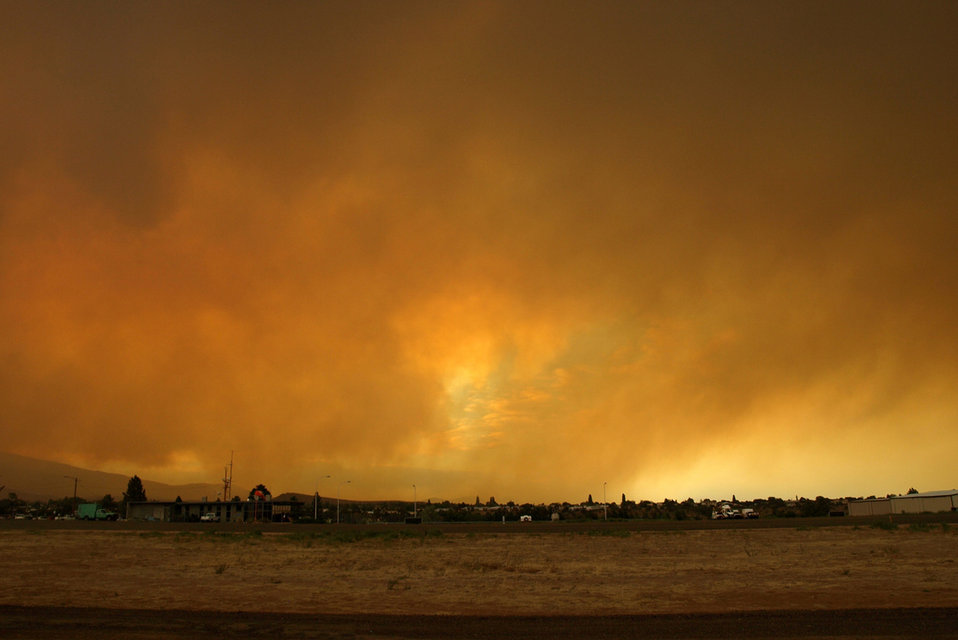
Smoke above the Mesas, Pajarito Plateau, looking northwest from southern edge of Municipal Airport in Los Alamos.

The Las Conchas Fire started on June 26, 2011, it was caused by a fallen tree that caught fire after it came in contact with power lines nearby. The fire had burned over 121,000 acres, including 63 residences. At no time were hazardous materials in danger at Los Alamos National Laboratory. The lab was closed for a week and reopened on July 6th.